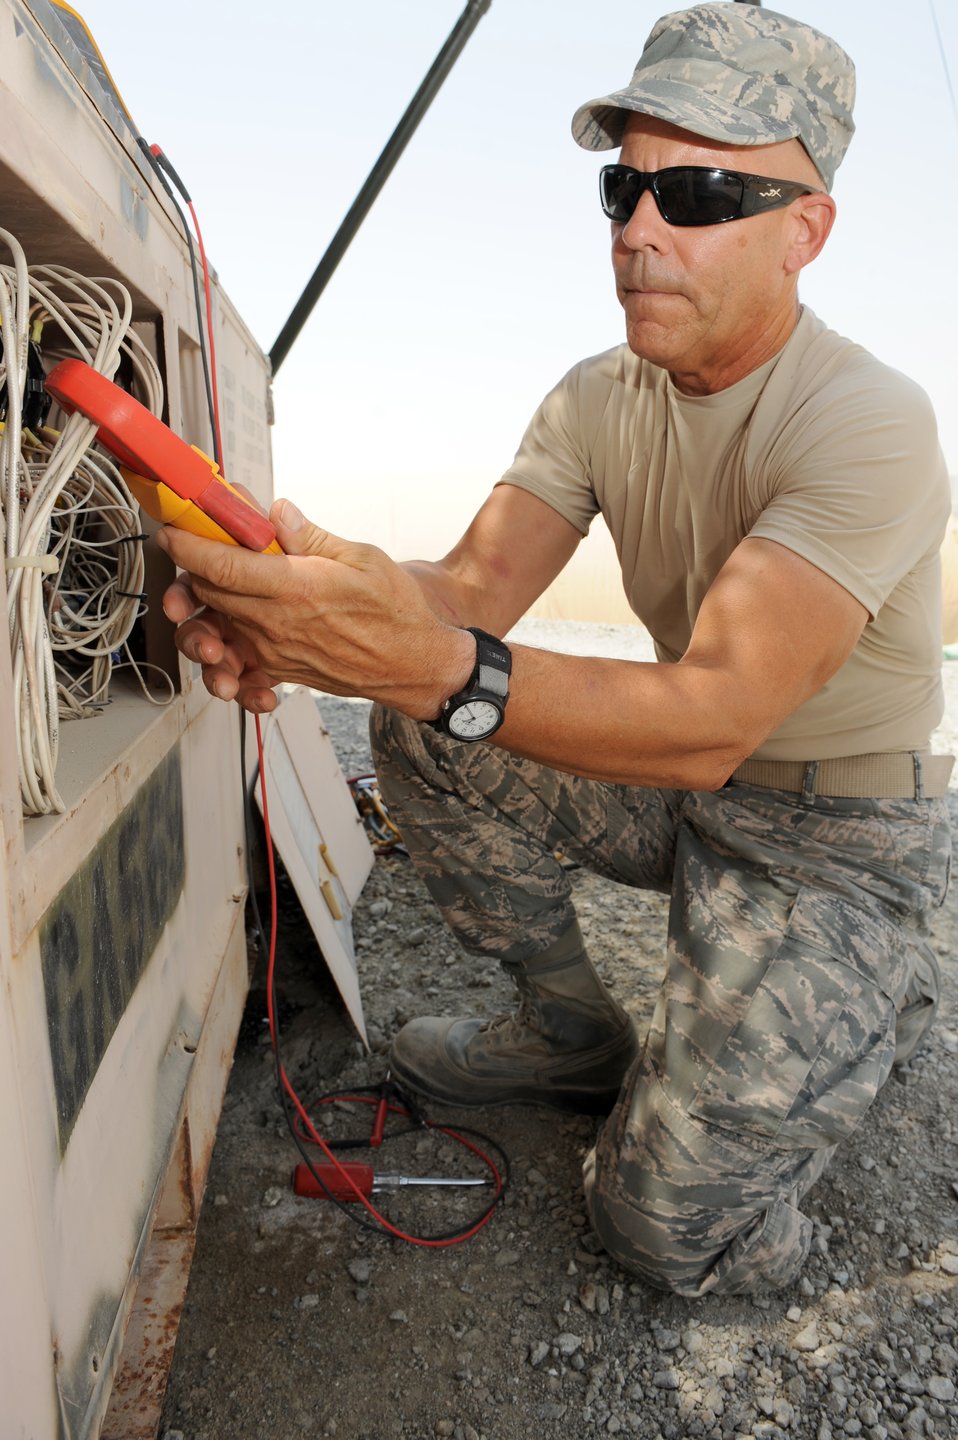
Getting the current

Master Sgt. John Anderson tests the amperage of an air conditioning unit Aug. 23, 2012. Anderson is the 727th Expeditionary Air Control Squadron Heating, Ventilation and air conditioning NCO in charge, and as a Moodus, Conn., native, is deployed to the 380th Air Expeditionary Wing from the Connecticut Air Guard.